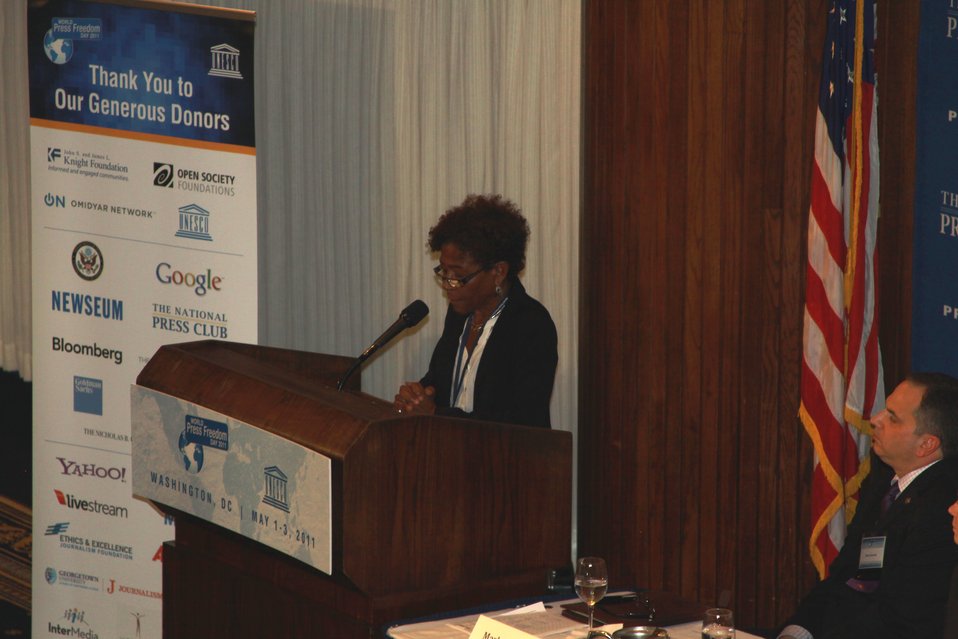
A speaker addresses the audience during the World Press Freedom Day 2011 Global Conference, at the National Press Club in Washington, D.C., on May 3, 2011.